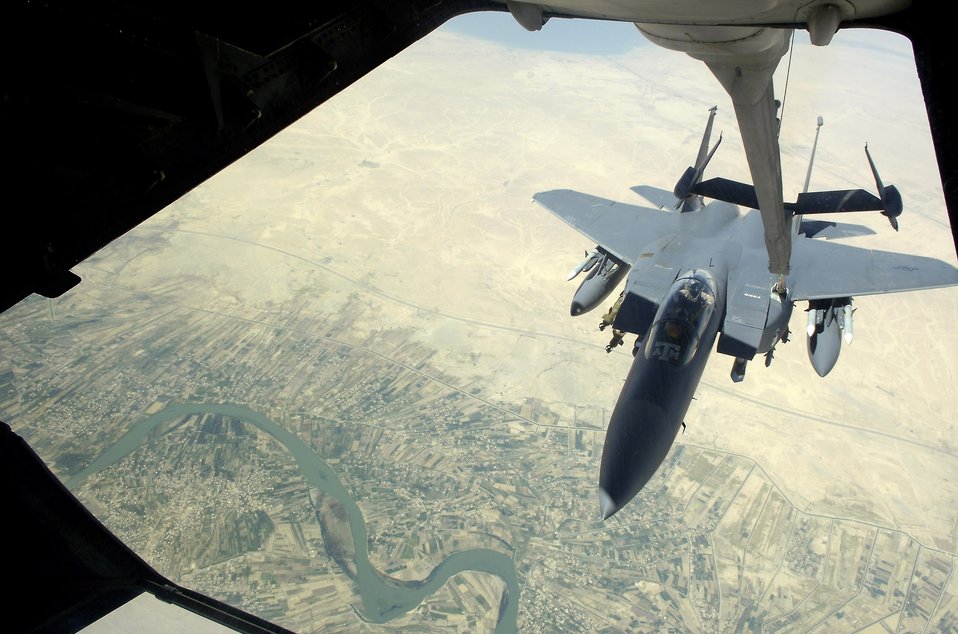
Two refuelers, one squadron can handle any situation

An F-15E Strike Eagle gets fuel from a KC-10 Extender over Baghdad, Iraq, on July 18. The F-15 was flying a close-air-support mission in support of Operation Iraqi Freedom. The KC-10 is with the 908th Expeditionary Air Refueling Squadron in Southwest Asia.